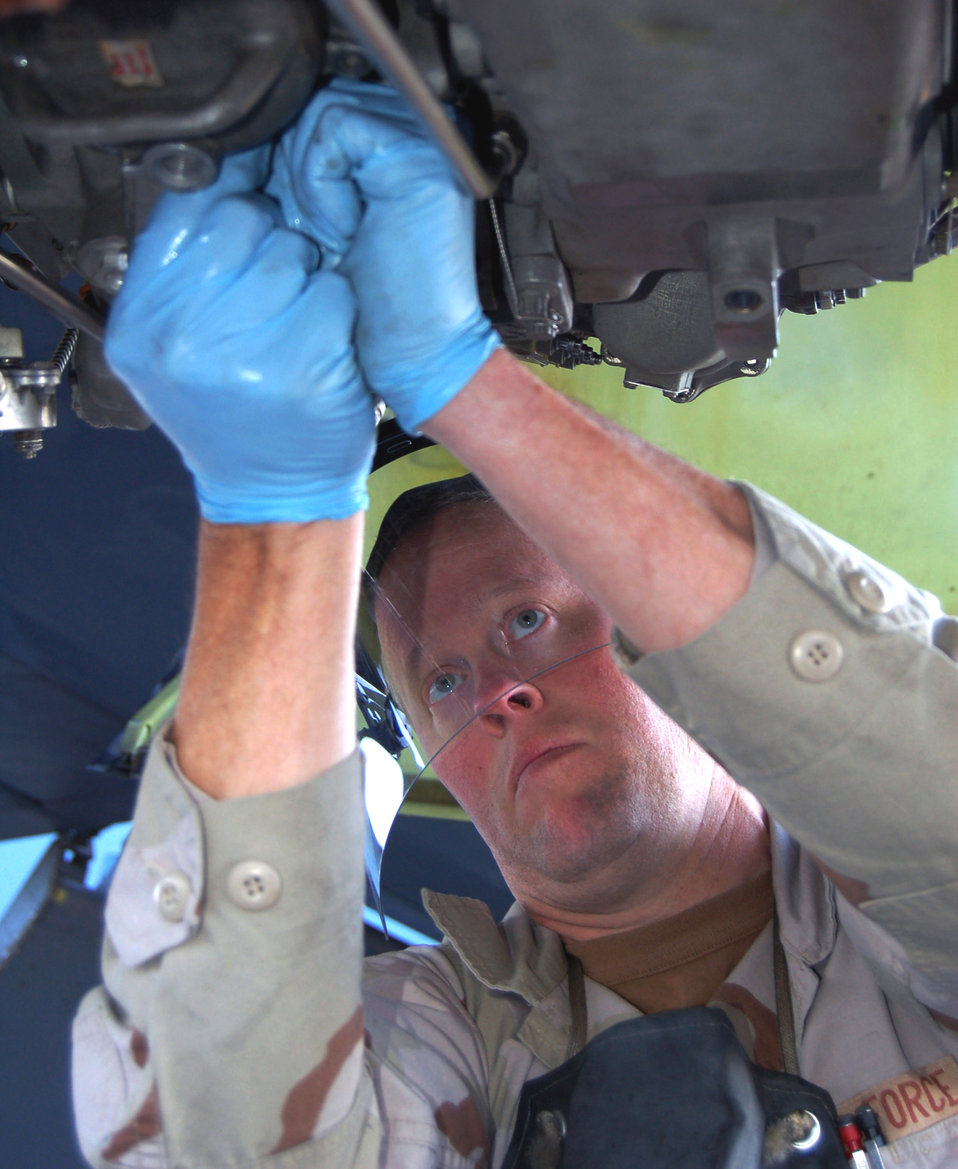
Maintenance unit moves fuel on time

Tech. Sgt. Fred Asbury tightens the fuel filter bolts on a KC-135 Stratotanker engine. Scheduled maintenance on the aircraft is determined by monitoring the hourly use-rate of aircraft components. Sergeant Asbury is a KC-135 jet engine mechanic deployed from the 92nd Aircraft Maintenance Squadron, Fairchild Air Force Base, Wash.